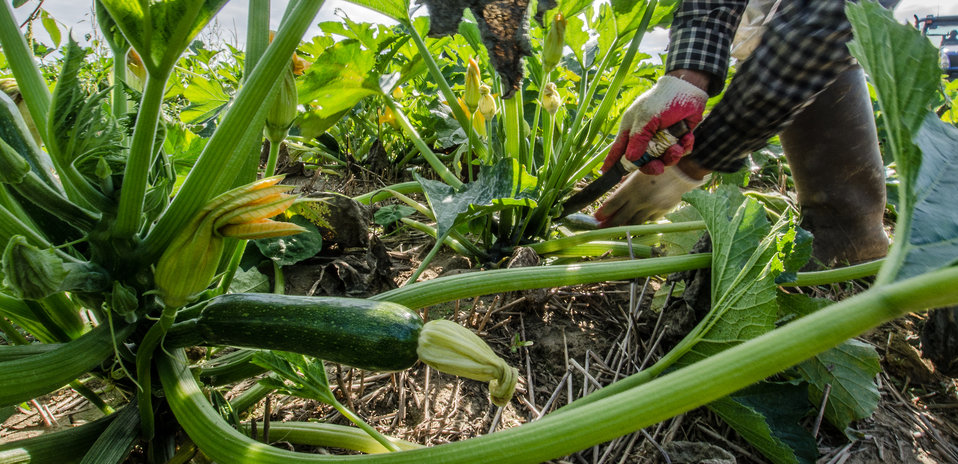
Migrant workers harvest green zucchini squash from rows of plants at Kirby Farms in Mechanicsville, VA on Friday, Sep. 20, 2013. The squash is then transferred to the processing crew for washing and packaging for shipment to wholesalers. Kirby Farms a third-generation family farm that covers 500 acres and generates produce and grains on a year-around operation.